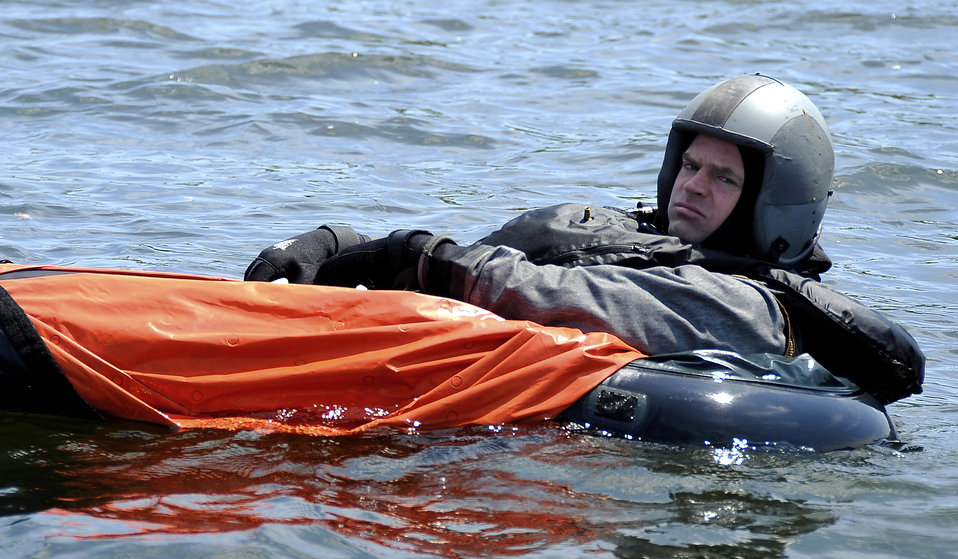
Ready for 'rescue'

Maj. Wesley Hales awaits